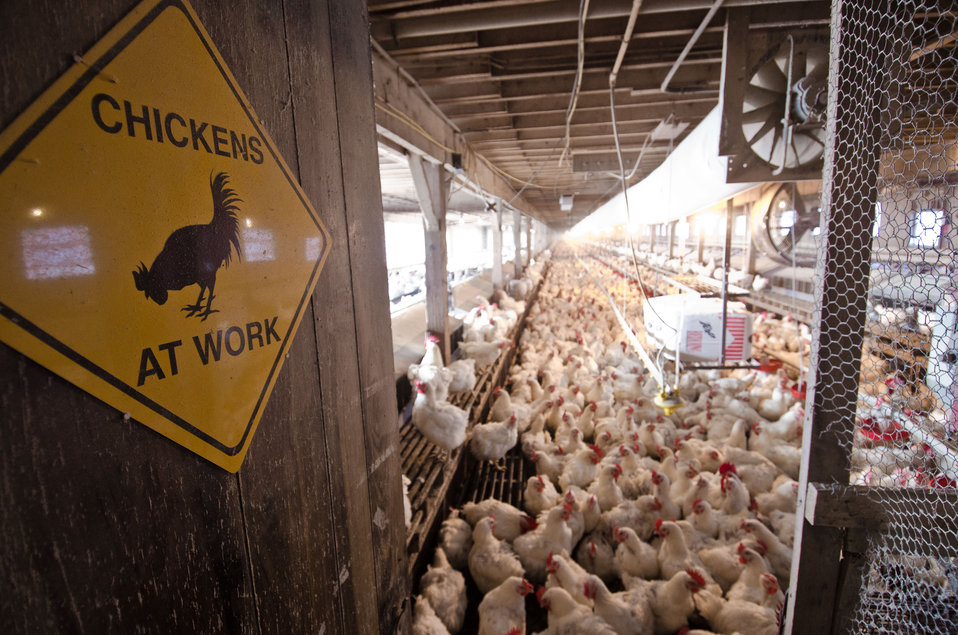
Some of the 17,000 poultry at Seldom Rest Farms located, north of Myerstown, PA, on Wednesday, April 20, 2011. The chickens are kept in a two story chicken house and produce approximately 2.5 million chicks each year. To supplement their electrical needs, they chose a contractor who knew about United States Department of Agriculture (USDA) Rural Energy for America program (REAP) grants and helped them through the application process. The farm was awarded a $152,000 grant (25% of the cost). to install the 1001kW solar array to power their farm, a neighboring farm and homes on the local electrical grid. The 240 solar panels were ground mounted with 5-foot clearance underneath to allow sheep to graze and rest underneath protected from the rain, sun or snowfall. Ten inverters change the DC electrical energy from the panels into AC energy that goes into the local power grid. Spring statistics show it is producing more than expected. REAP offers grants and/or loan guarantees for the purchase and installation of renewable energy generating systems and for energy efficiency improvements.